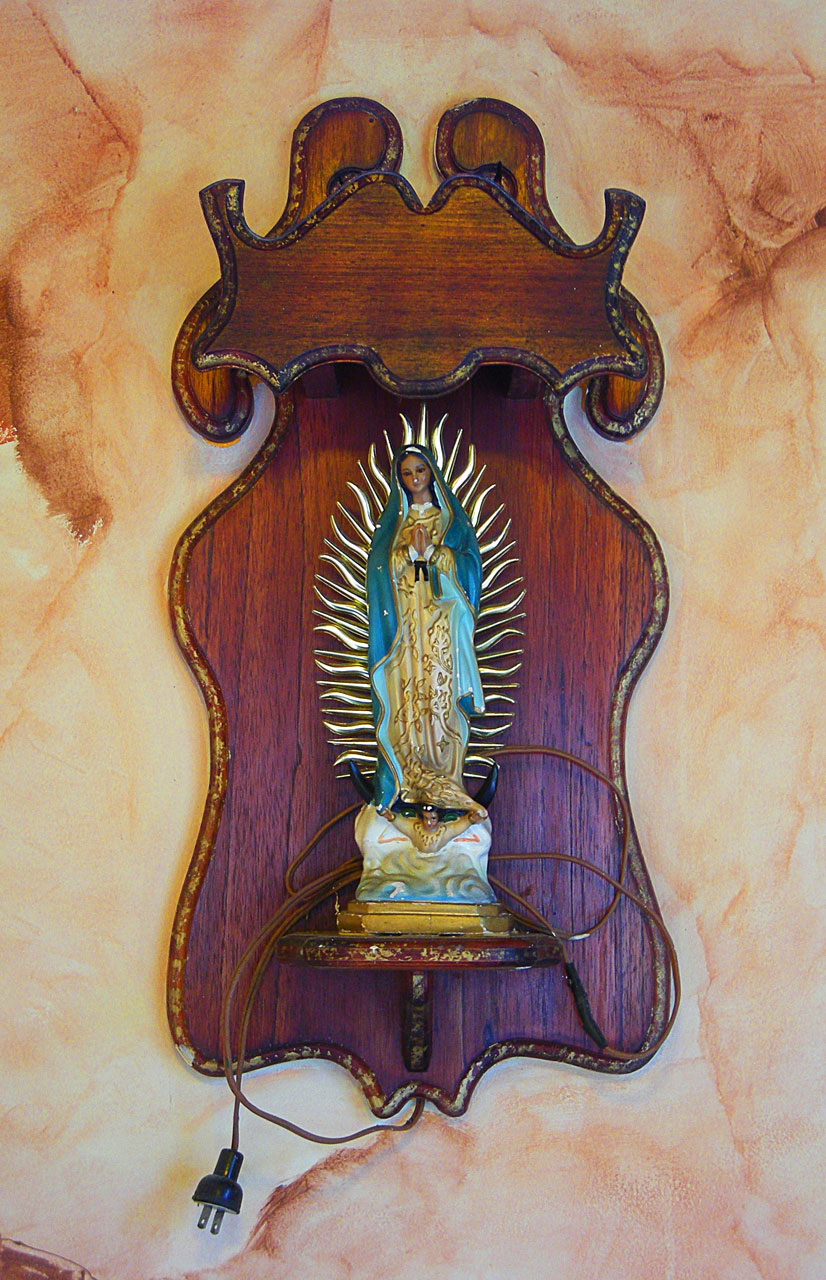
Our lady unplugged

Religious wall sculpture.